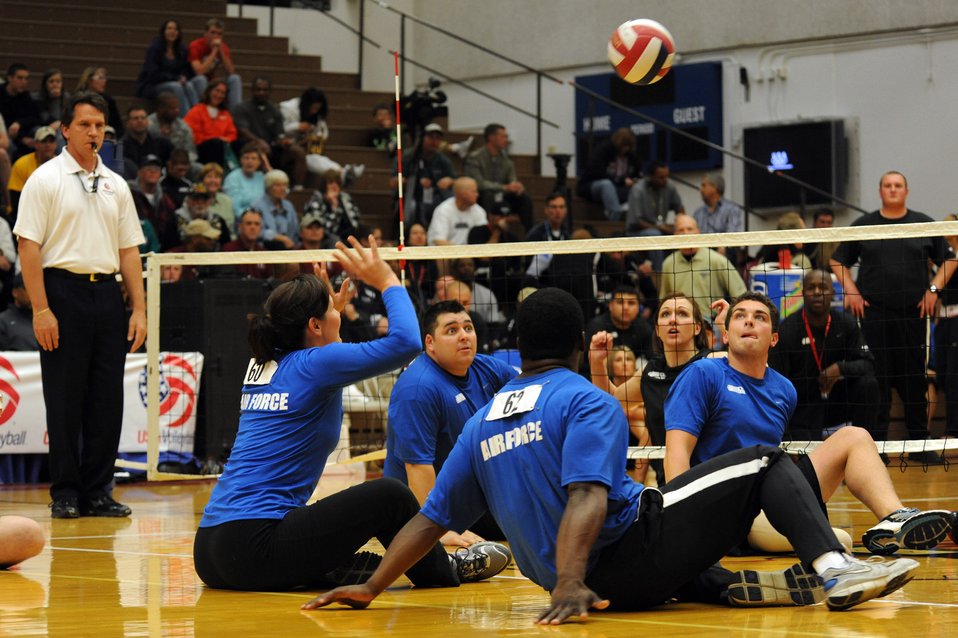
AF Volleyball wins Bronze at Warrior Games

Air Force Warrior Games athlete, Stacy Pearsall, prepares to hit the ball during the Warrior Games sitting volleyball match against Army at the U.S. Olympic Training Center in Colorado Springs, Colo., May 13, 2010.